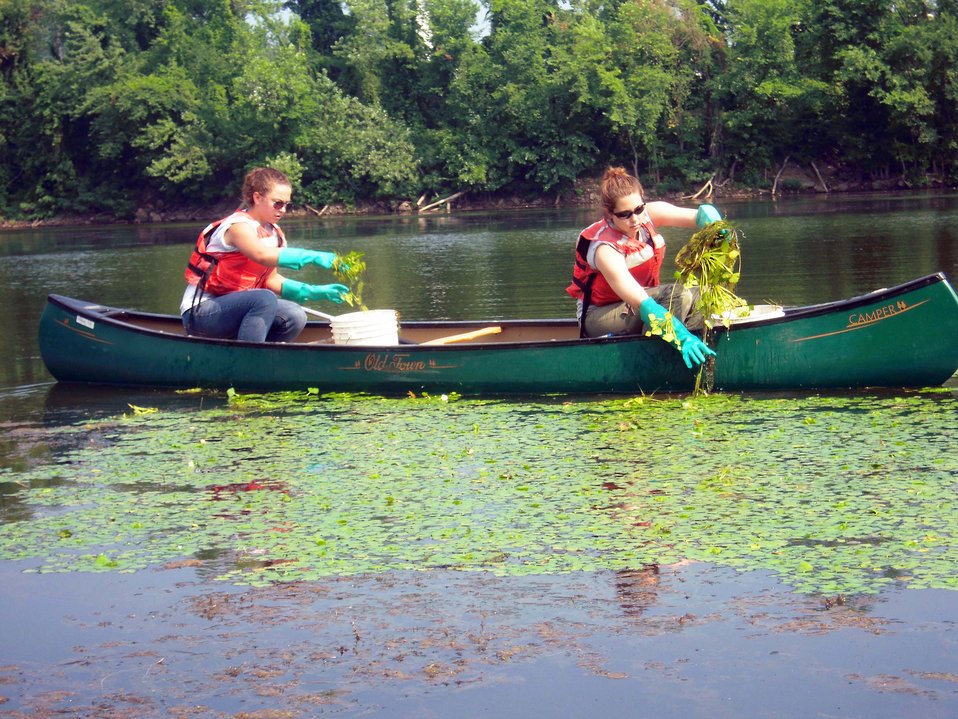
YCC crew removing water chestnut